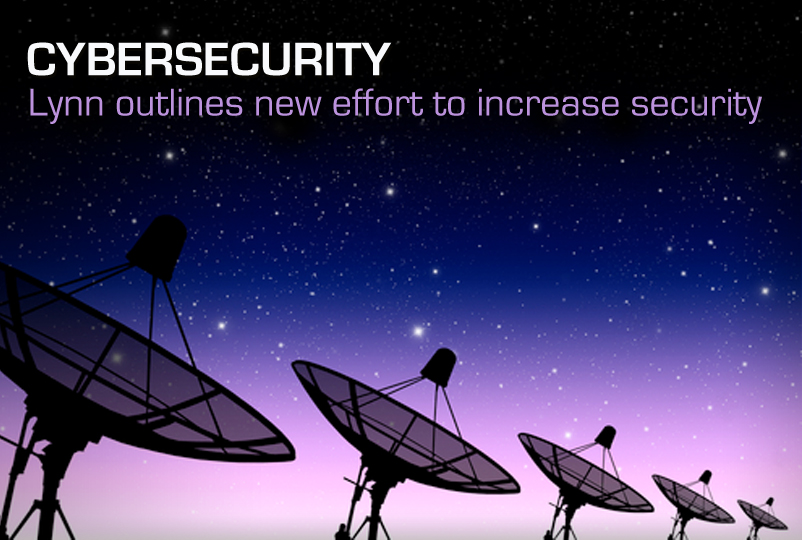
Cybersecurity